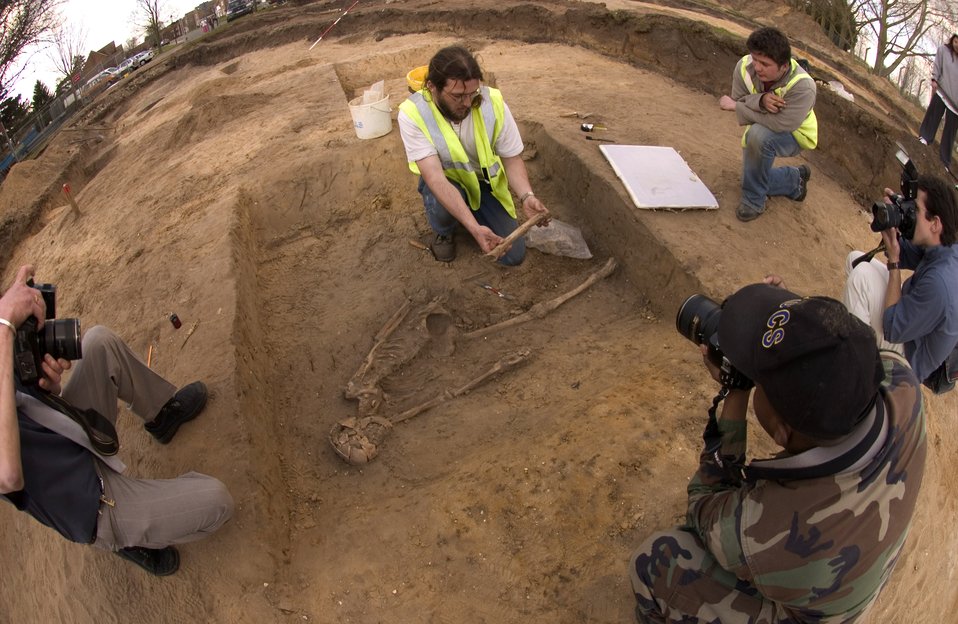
Skeletal remains discovered during dig at Mildenhall

John Craven, an archeologist for Suffolk County Council, lifts the remains of a human skeleton from the earth March 14 at Royal Air Force Mildenhall, England. The skeleton was found during an excavation at Beck Row base housing where new construction is planned. The remains were estimated be of 1st century A.D. Roman descent between 1,900 and 2,000 years old.